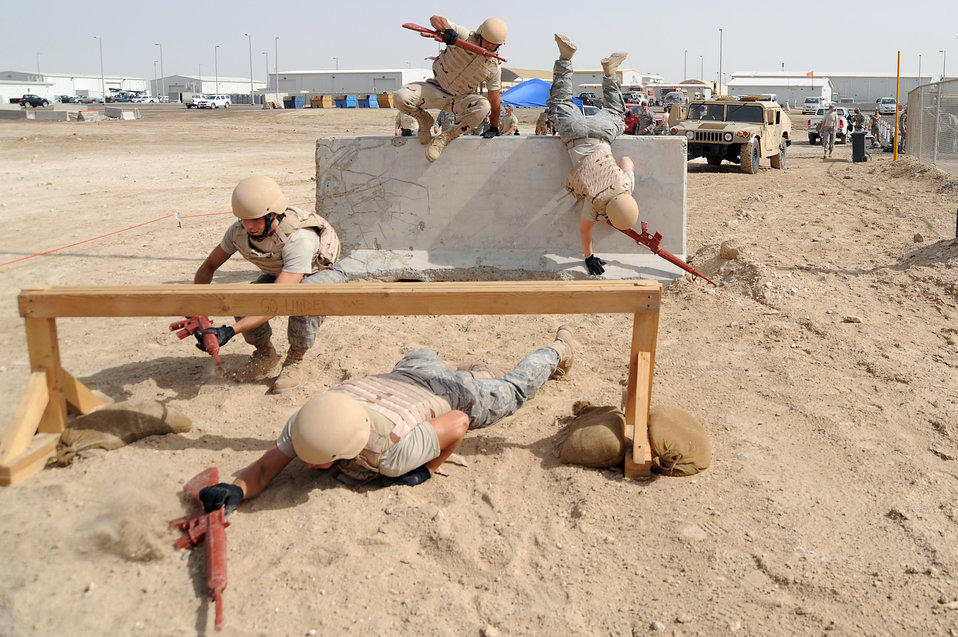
Challenge pushes Airmen, Soldiers

Senior Airman Matthew McCarthy low crawls under a wood barrier as Staff Sgt. Cory Bobo follows while Senior Airman Paulo Giraldo and Senior Airman Erin Kinney jump a 4 foot jersey barrier on a Defender Challenge course April 25 at an air base in Southwest Asia. Airman McCarthy, Sergeant Bobo and Airman Giraldo are with the 380th Expeditionary Civil Engineer Squadron and Airman Kinney is with the 380th Expeditionary Security Forces Squadron. The team won the competition beating out the second place team by one second. Airman McCarthy is deployed from Bolling Air Force Base, D.C., and hails from Omaha, Neb. Sergeant Bobo is deployed from Aviano Air Base, Italy and hails from Athens, Ohio. Airman Giraldo is deployed from Bolling AFB and hails from Revere, Mass. Airman Kinney is deployed from Tinker AFB, Okla., and hails from Austin, Texas.